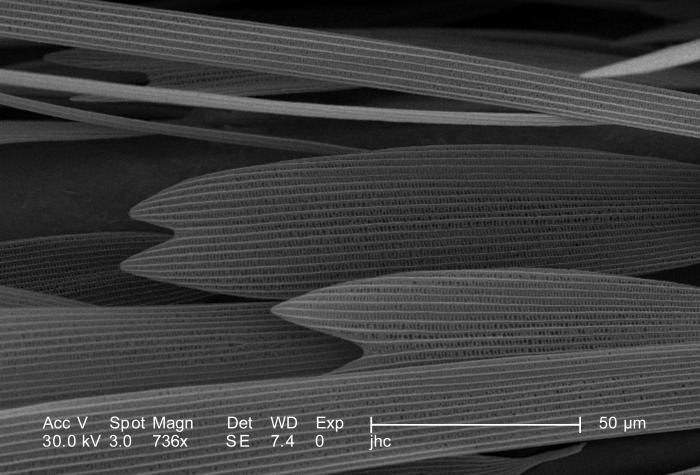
Under a moderately high magnification of 736X, this scanning electron micrograph (SEM) revealed some of the ultrastructural exoskeletal morphology displayed by an unidentified white moth, which had been found deceased on the ground in the suburbs of Decatur, Georgia. In this particular view, you'll note the thin, ribbony structures, which are known as "setae", and are sensorial in nature, and the striated scales. Both setae and scales are found all over the insects exoskeletal surface, and are composed of the same chitinous material.